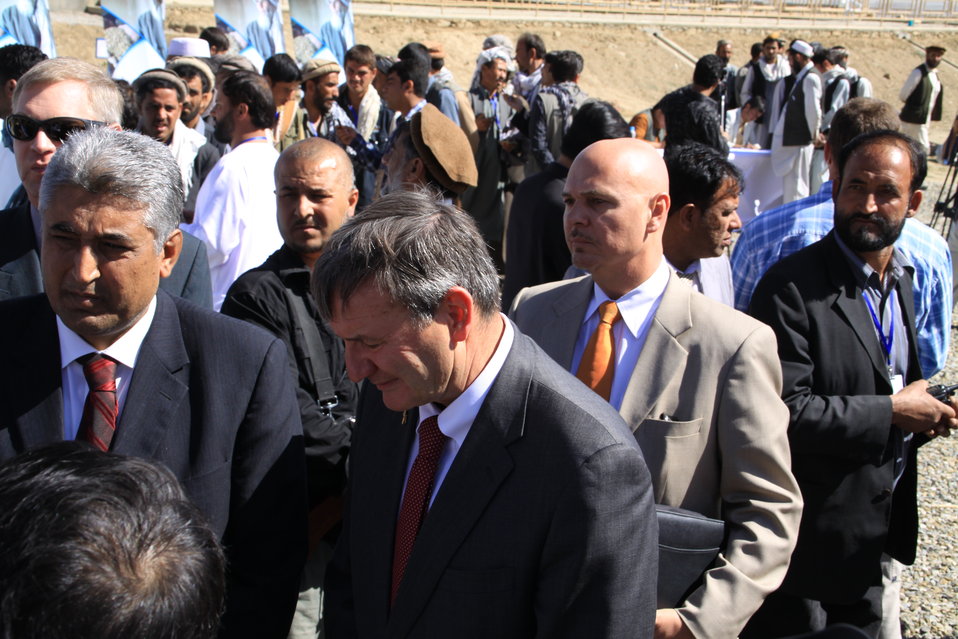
AVIPA Plus Wheat Seed Distribution 101005

US Ambassador Karl Eikenberry and USAID Acting Mission Director Kevin Brownawell joined the Minister of Agriculture, Irrigation and Livestock, H.E. Minister Mohammed Rahimi in signing a Memorandum of Understanding and distributing vouchers to area farmers for wheat and fertilizer.

US Ambassador Karl Eikenberry and USAID Acting Mission Director Kevin Brownawell joined the Minister of Agriculture, Irrigation and Livestock, H.E. Minister Mohammed Rahimi in signing a Memorandum of Understanding and distributing vouchers to area farmers for wheat and fertilizer.

US Ambassador Karl Eikenberry and USAID Acting Mission Director Kevin Brownawell joined the Minister of Agriculture, Irrigation and Livestock, H.E. Minister Mohammed Rahimi in signing a Memorandum of Understanding and distributing vouchers to area farmers for wheat and fertilizer.